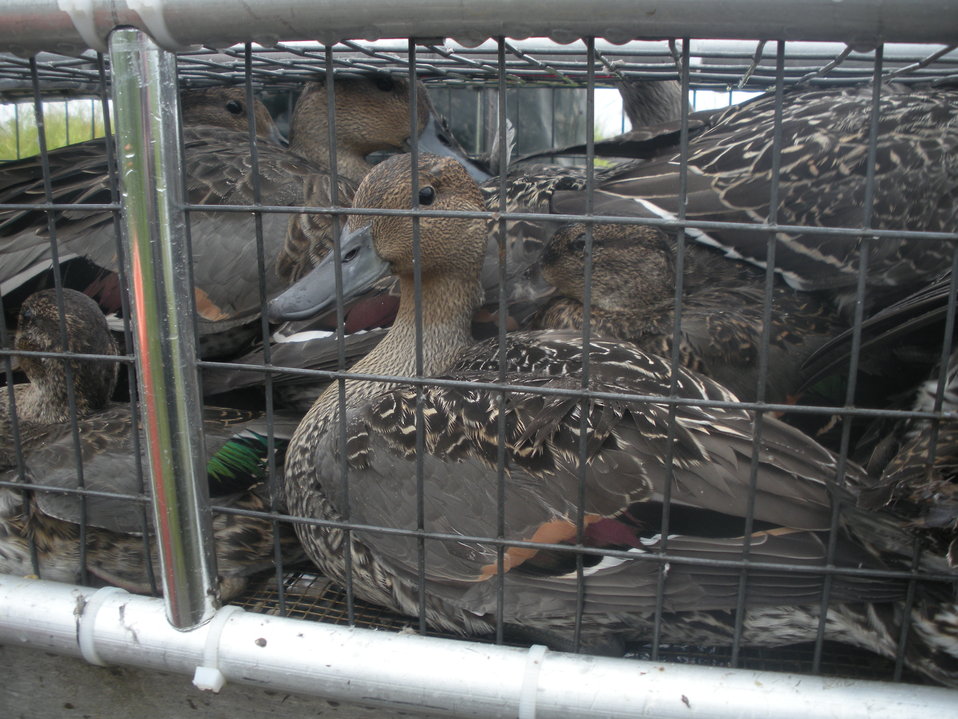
Chilling out

This female pintail is relaxing in the catch box, waiting to be processed (aged, sexed, and banded) and released.

USFWS Yukon Delta NWR